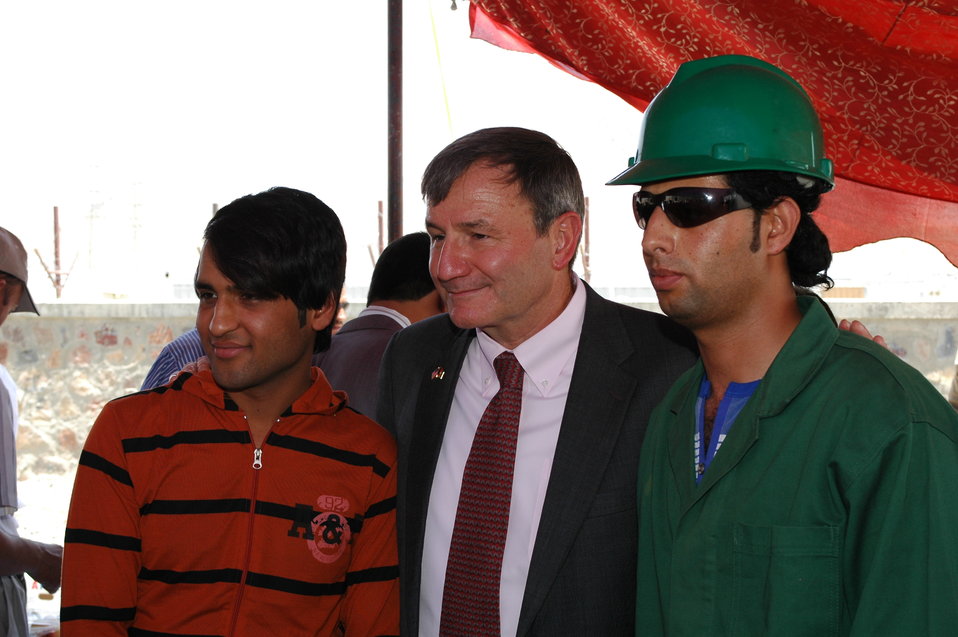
105 MW Tarakhil Power Plant Handover